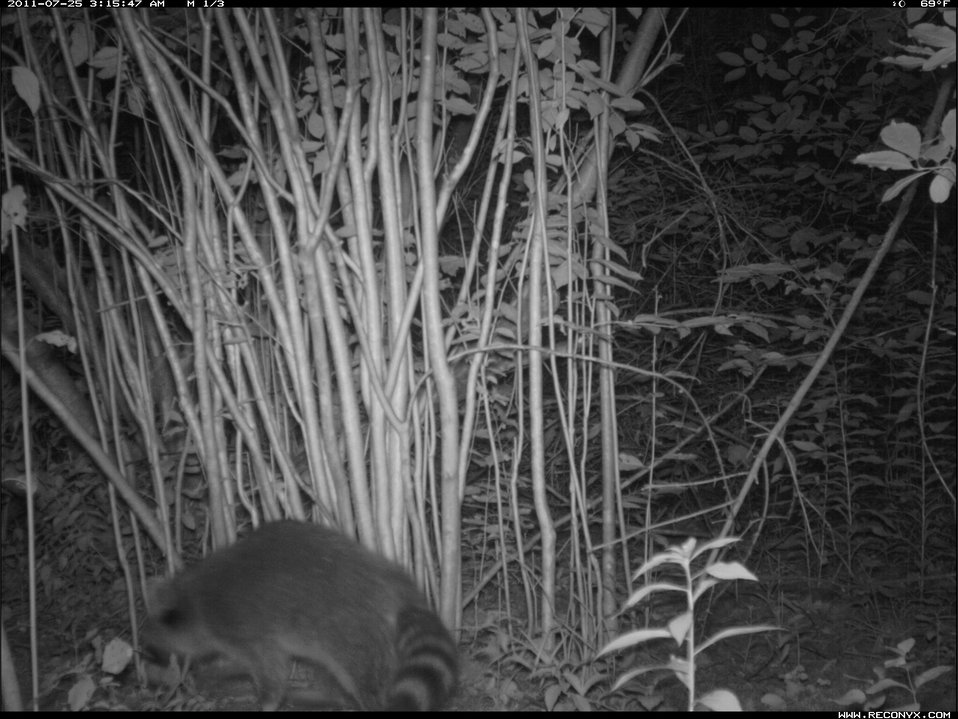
Raccoon